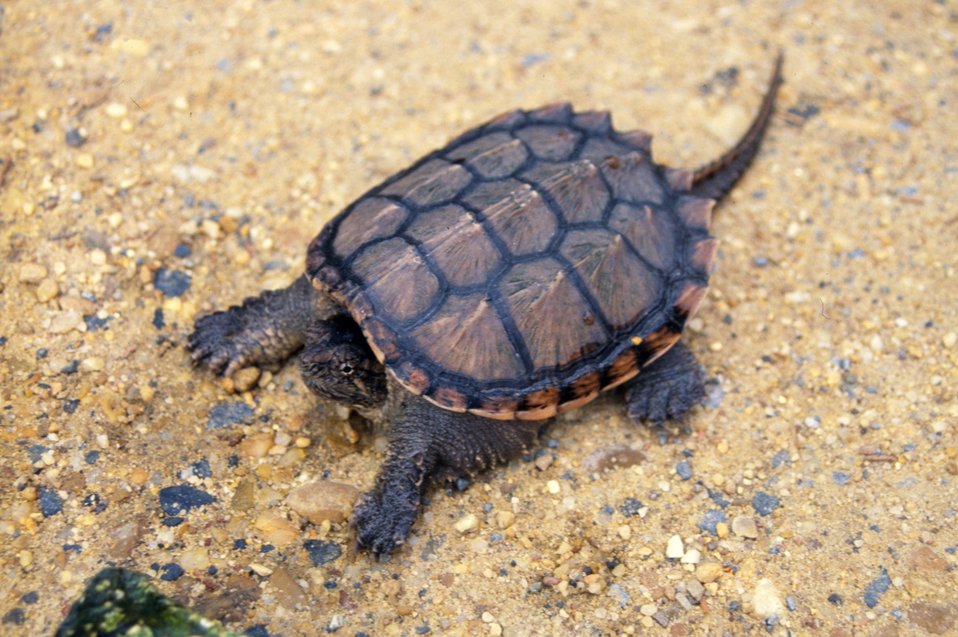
A juvenile snapping turtle. These turtles can inflict serious bites so handle with care.